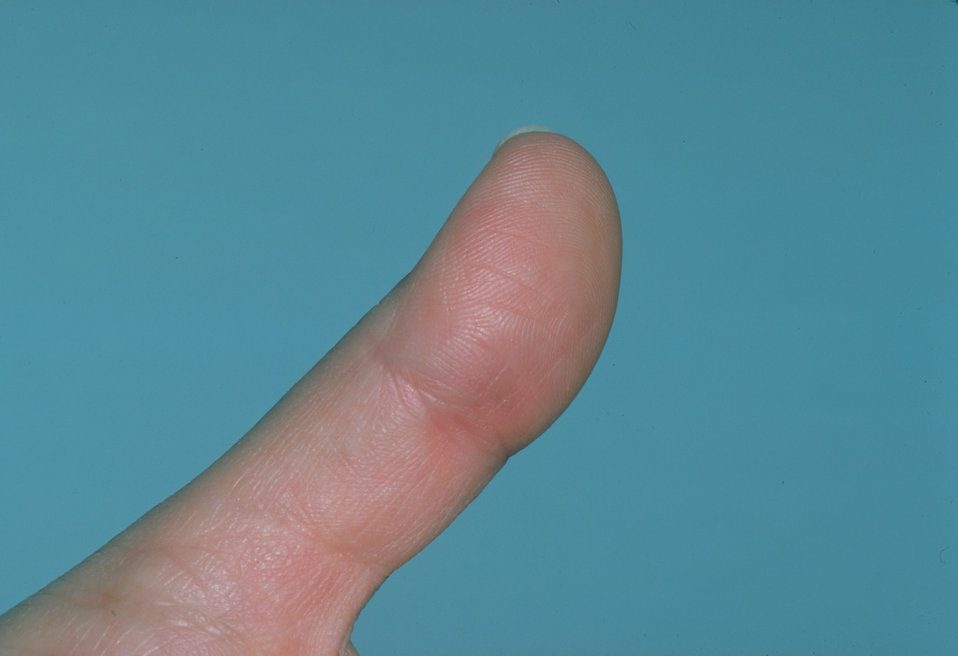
This patient presented with sporotrichosis affecting the skin of the thumb.